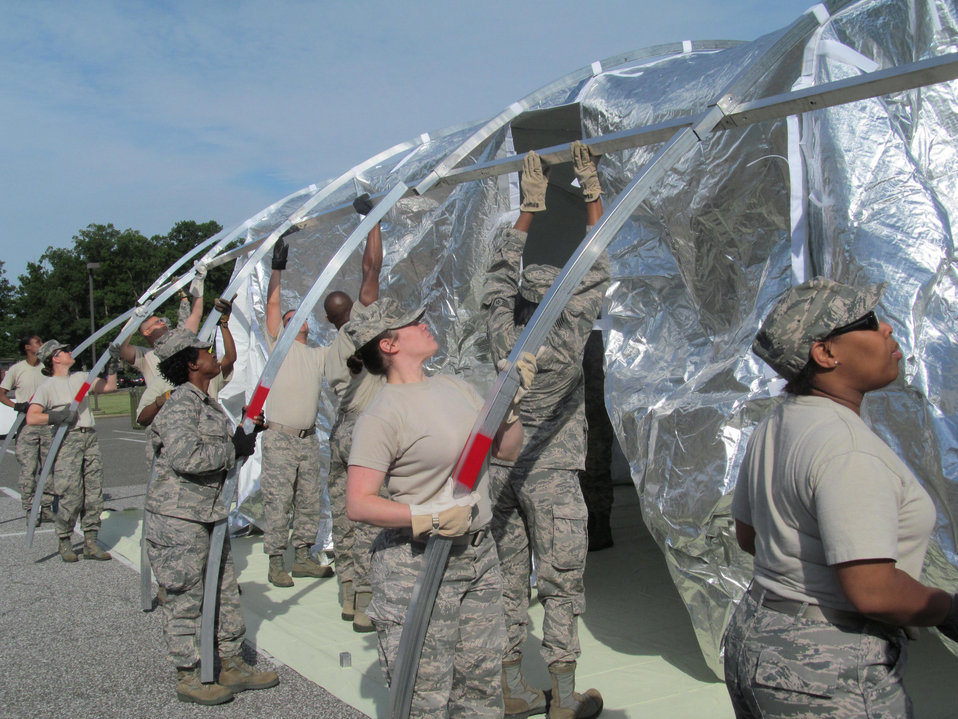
AF emergency response training

The 779th Medical Group conducted an exercise to hone their disaster-response skills June 6 on Joint Base Andrews. Two expeditionary medical support teams, made up of more than 50 members each, constructed and took down a 25-bed field hospital. Here members install the wall frame of the shelter.